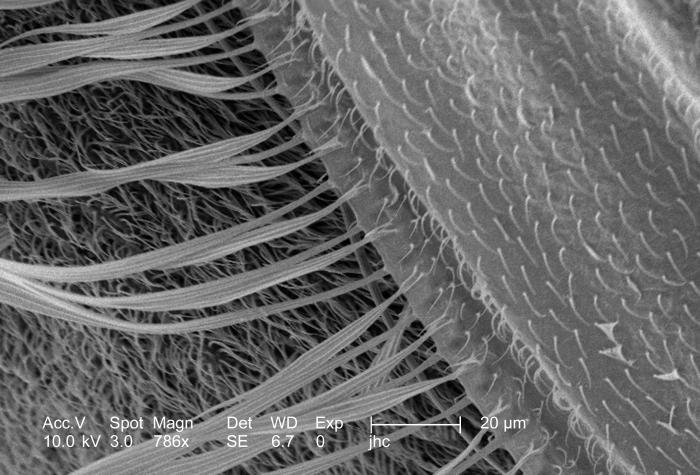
At a moderately high magnification of 786x, this scanning electron micrograph (SEM) revealed some of the morphologic features displayed by an Anopheles gambiae mosquito. Included in the field of view was the posterior edge of one of the insect's two wings. Note that this wing edge is adorned with a sensorial row of "fringe scales", which relay changes in wind speed and direction during flight back to the mosquito. The wing surface itself is also displaying a covering of setae that are considerably smaller than those emanating from the wing's edge.